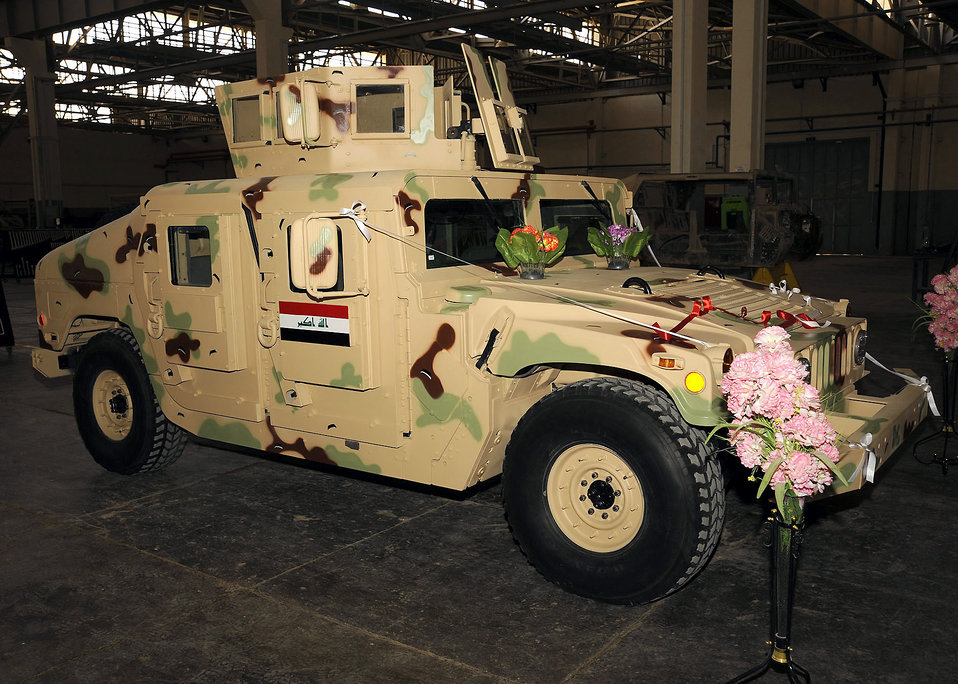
Airman tracks down parts for Iraqi maintenance depot

An M1114 HMMWV is called Project One because it is the first vehicle to go through the overhaul production by an all Iraqi maintenance crew March 4 at Taji, Iraq. Members of the Iraqi army worked on the transmission, engine, drive train and paint job.